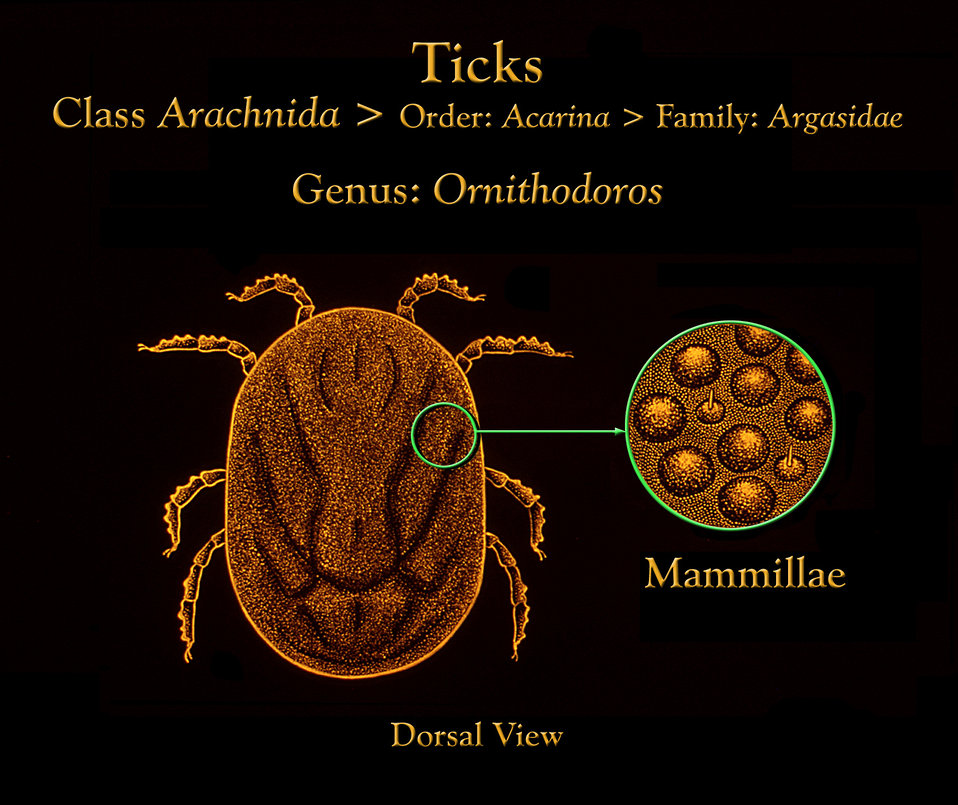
This illustration depicts an enlarged portion of the integumentary structure found on the dorsum of an Ornithodoros soft tick.